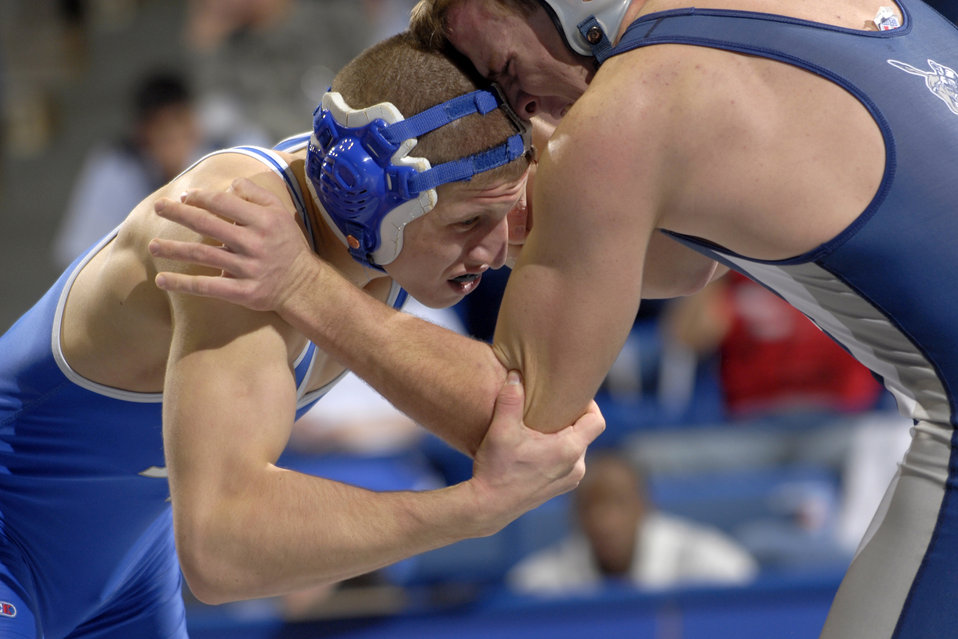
Falcons lose in first home contest

Falcon junior Joseph Stafford wrestles Colorado School of Mines' Jacob Guynes in the 165-lb. weight class during Air Force's first home contest of the season at the U.S. Air Force Academy's Clune Arena Dec. 11, 2009. Stafford recorded a fall over Lewis. Air Force defeated Colorado School of Mines, 33-13.